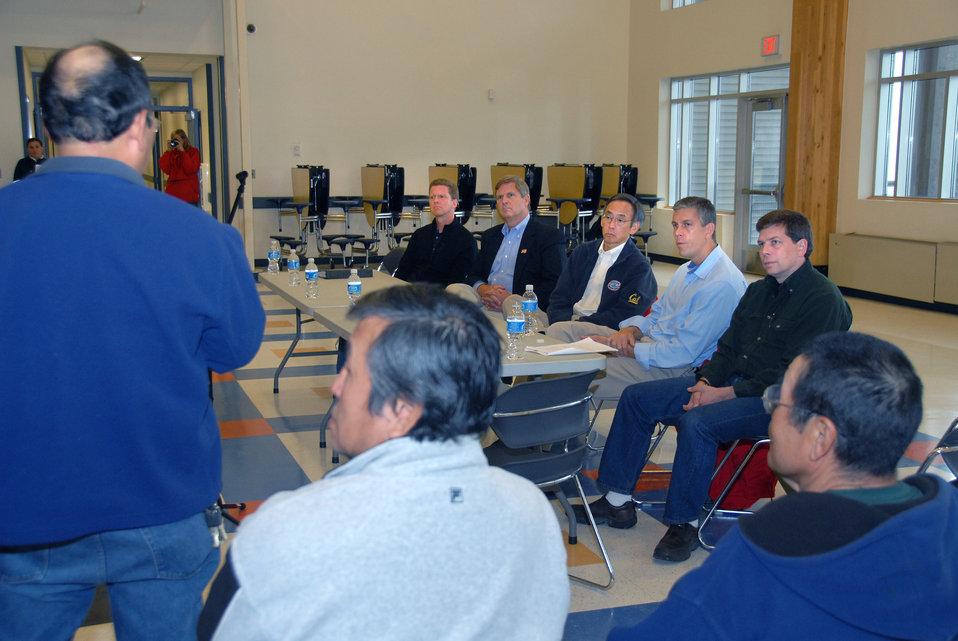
Rural Tour 0285

Rural Tour Alaska Aug 2009